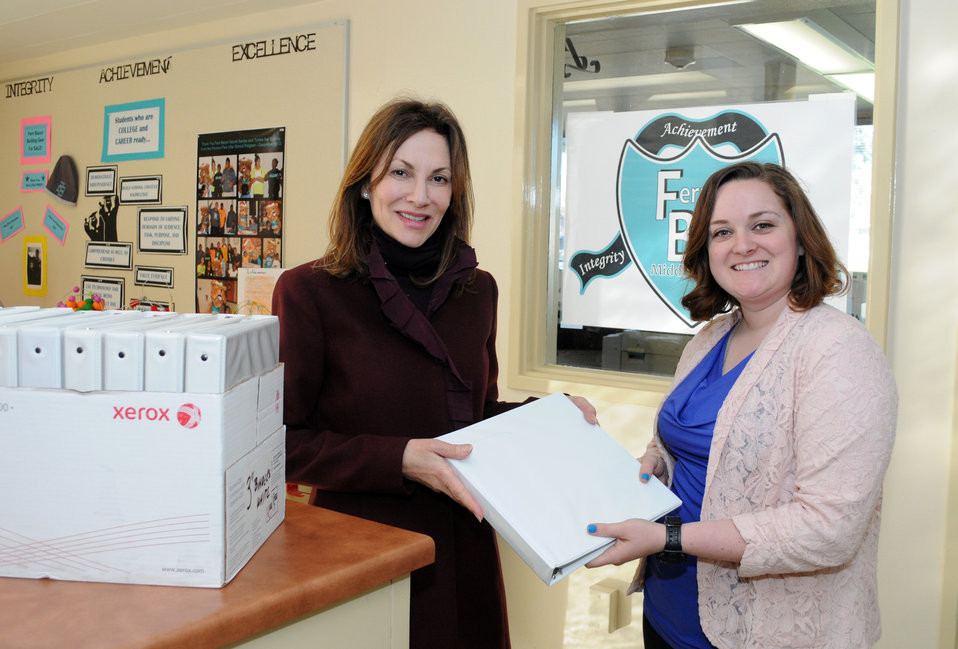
Corps donates excess binders to local Sacramento schools

Nancy Purcell (left), the principal at Fern Bacon Middle School, receives one of 175 binders from Amanda Erwin, an equal employment opportunity specialist with the U.S. Army Corps of Engineers Sacramento District, during a visit to the Sacramento-area school Feb. 20, 2013.
This is the second donation of binders by the Sacramento District to the school – 104 were donated in June 2012. “Small donations like these make a big difference at schools,” said Purcell. An additional donation of 61 binders was provided to Hiram Johnson High School the same day.